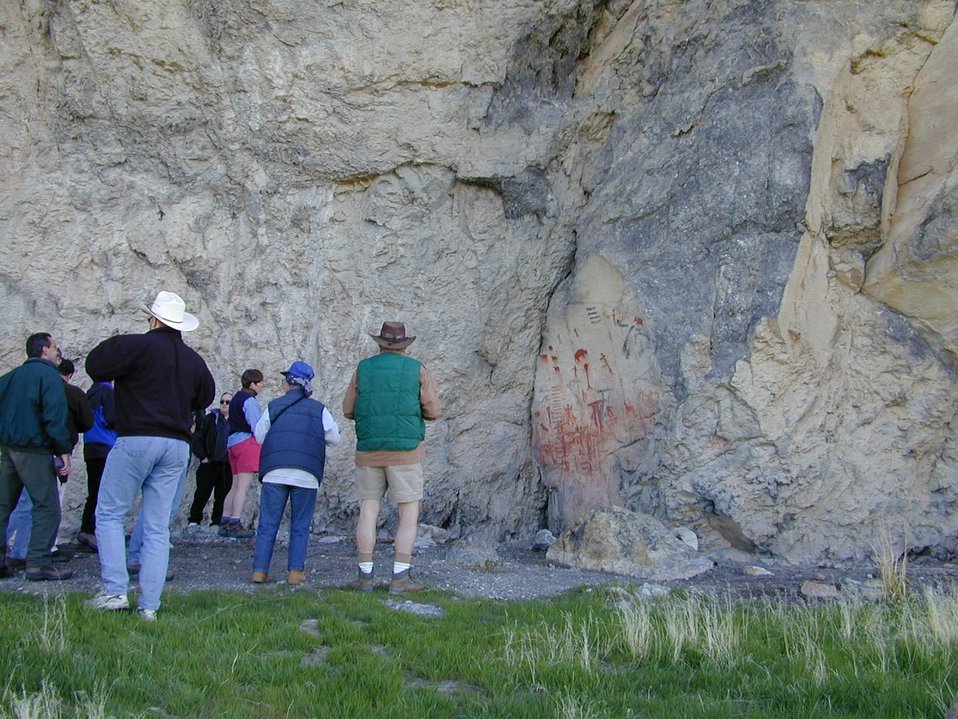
Birch Creek Valley Idaho Falls Field Office USRD Upper Snake River District